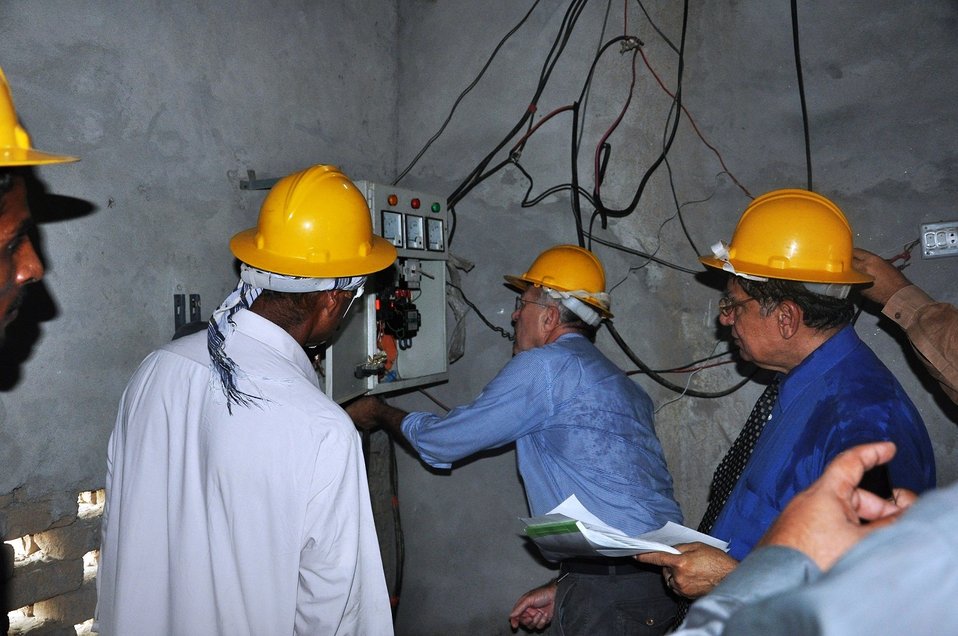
Field Visit at MEPCO - Power Factor Correction Performance Improvement Project

Multan, September 13, 2011- USAID's Power Distribution Program implementing its Rural Feeder Optimization Performance Improvement Project at MEPCO's Lal Kamal Feeder. The Lodhran Subdivision was jointly selected as the site for the Power Factor Correction Performance Improvement Project. This project aimed at reduction of technical losses, improvement of voltage and release of power system capacity by installing capacitors on the Tube-well motors active on the feeder.